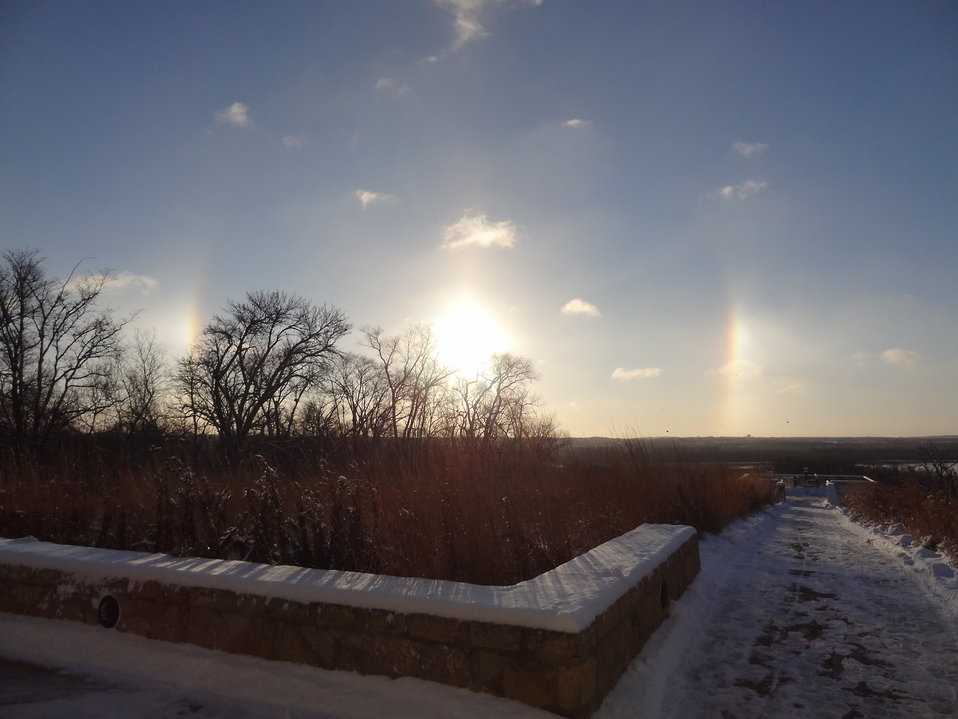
Sundog at Minnesota Valley National Wildlife Refuge

It was a frigid, yet beautiful morning today. Sun dogs happen when sunlight passes through ice crystals in the air.

Photo: Sun dog by Sarah Inouye-Leas/USFWS — at Minnesota Valley National Wildlife Refuge.